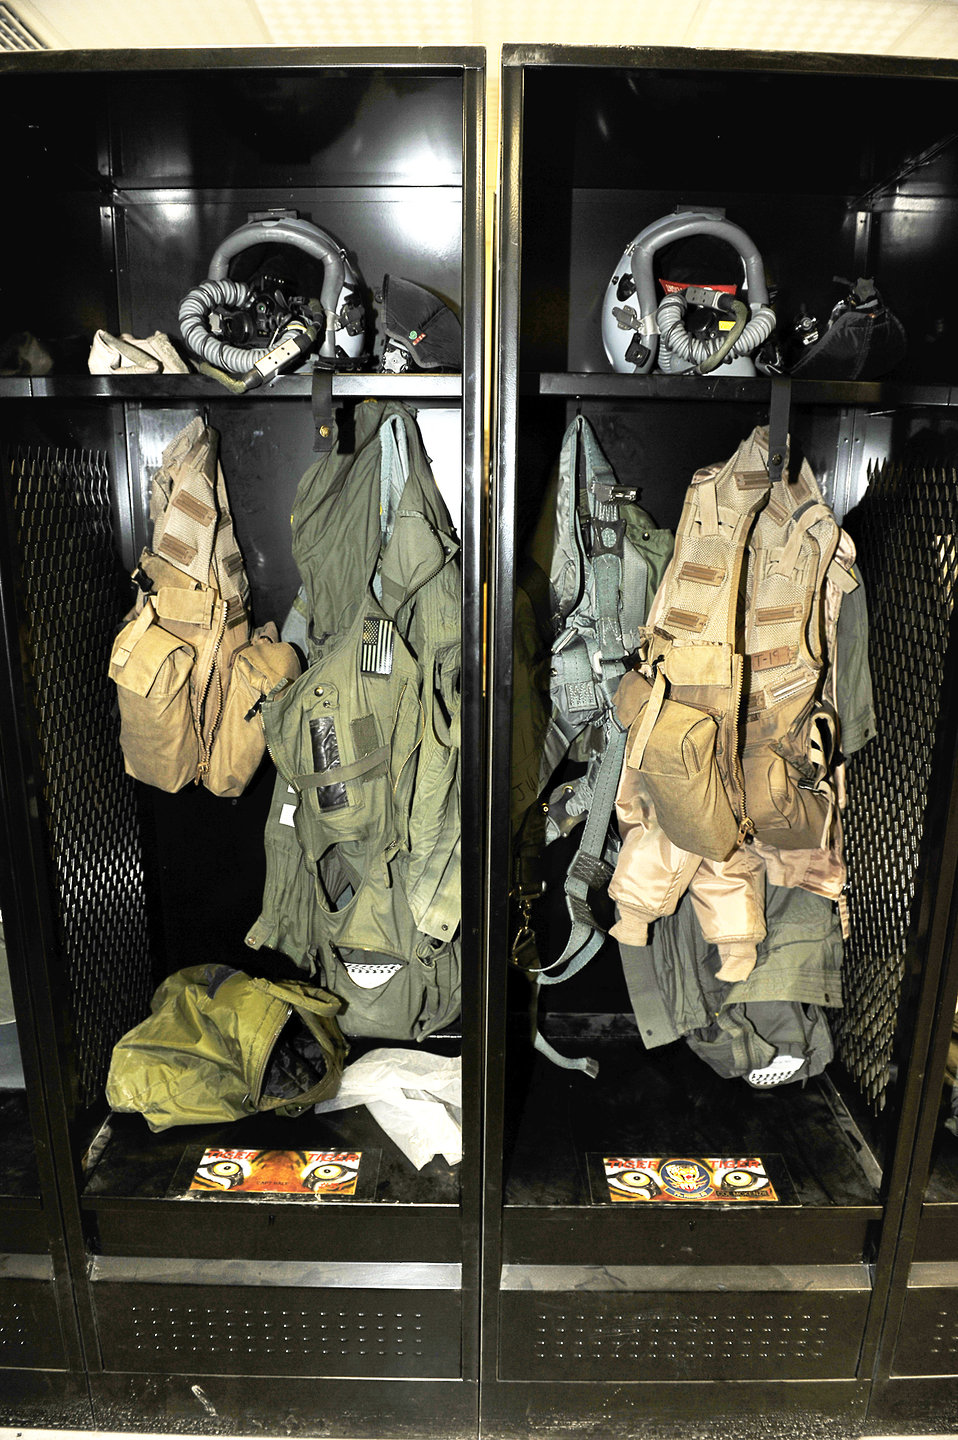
Airmen prepare for night mission at Bagram

The Airmen of the 455th Expeditionary Operation Support Squadron at Bagram Airfield, Afghanistan, maintain life support equipment Jan. 4, 2010.